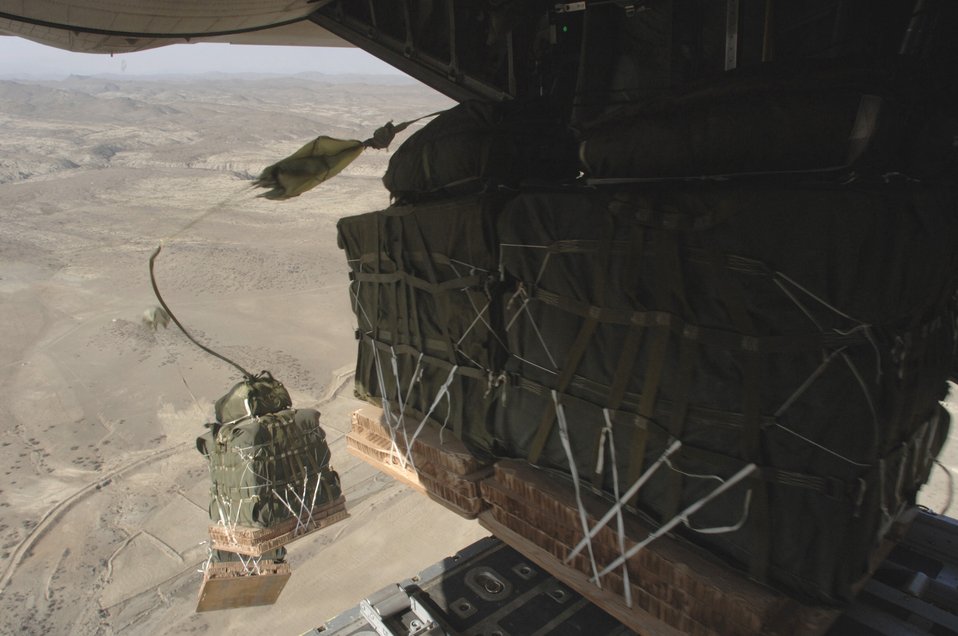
Humanitarian relief remains constant priority

Containerized delivery system pallets roll out of a C-130 Hercules aircraft near the Pakistan border Thursday, March 9, 2006. The aircraft and most of its crew are deployed to the 774th Expeditionary Airlift Squadron, Bagram Air Base, Afghanistan, from the Oklahoma Air National Guard's 185th Airlift Squadron. Airdrops like these bring supplies to those in need.